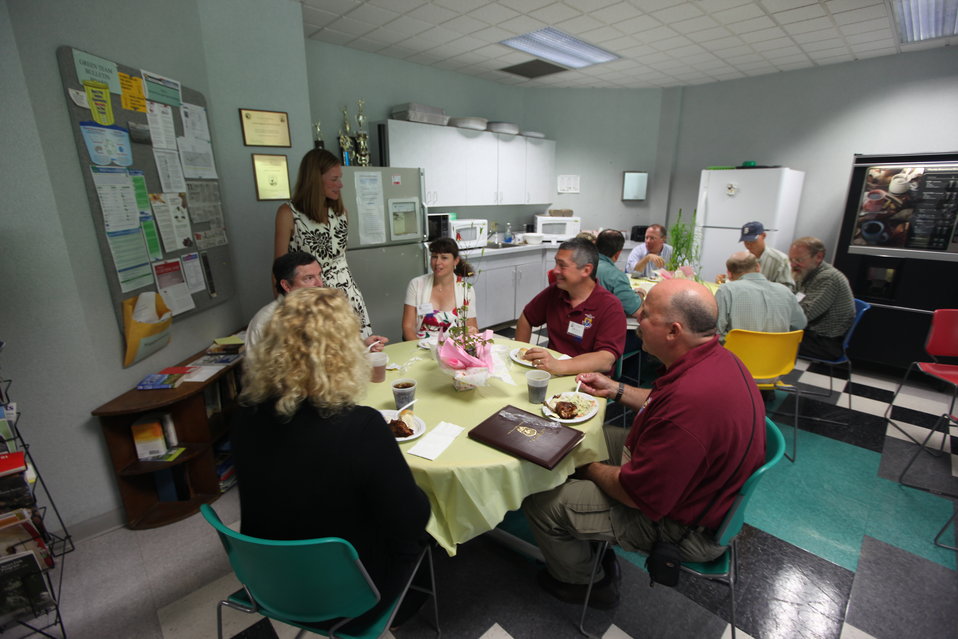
Northeast Region Employee Appreciation Awards

Luncheon